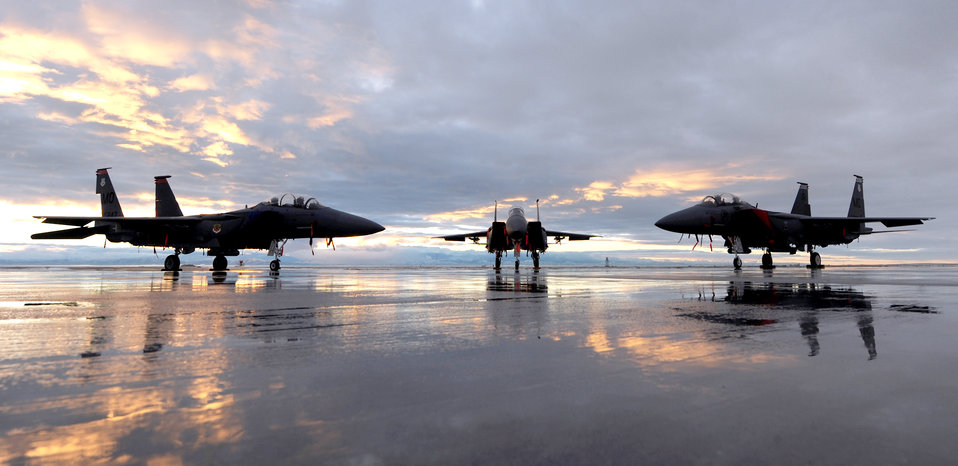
F-15s with an eagle eye

An F-15SG and two F-15E Strike Eagles sit on the flightline during sunset Dec. 6, 2010, at Mountain Home Air Force Base, Idaho. The F-15's superior maneuverability and acceleration are achieved through its high engine thrust-to-weight ratio and low-wing loading. It was the first U.S. operational aircraft in which the engines' thrust exceeded the plane's loaded weight, permitting it to accelerate while in vertical climb. The F-15Es are assigned to the 391st and 389th Fighter Squadrons and the F-15SG is assigned to the 428th Fighter Squadron.